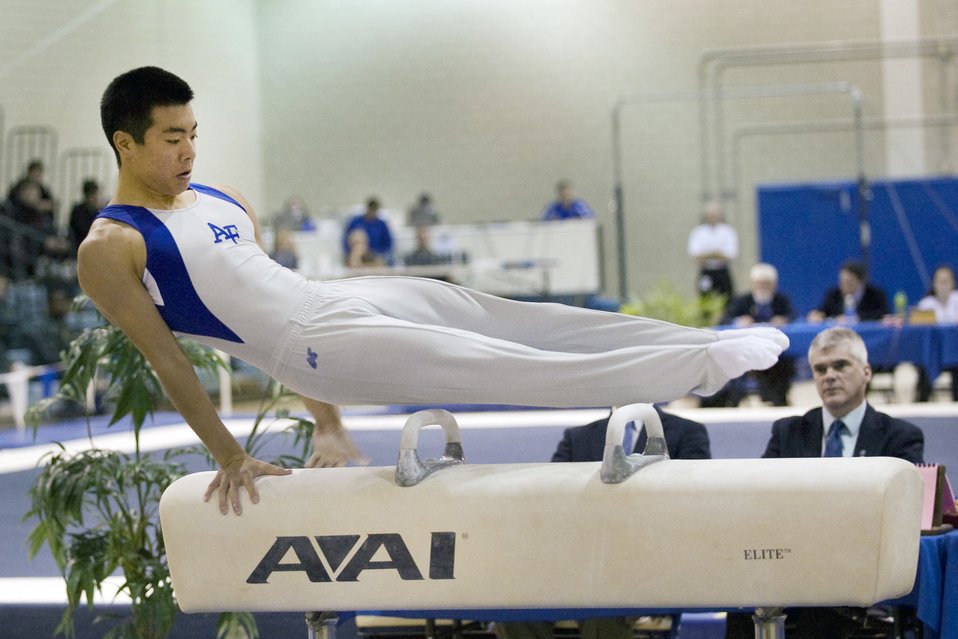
USA Gymnastics Championships

Falcon freshman James Okamoto performs on the pommel horse during the USA Gymnastics Championships held at the U.S. Air Force Academy's Cadet Gym in Colorado March 27, 2010. Okamoto was named USAG All American, for his second place finish and a career best score of 14.350